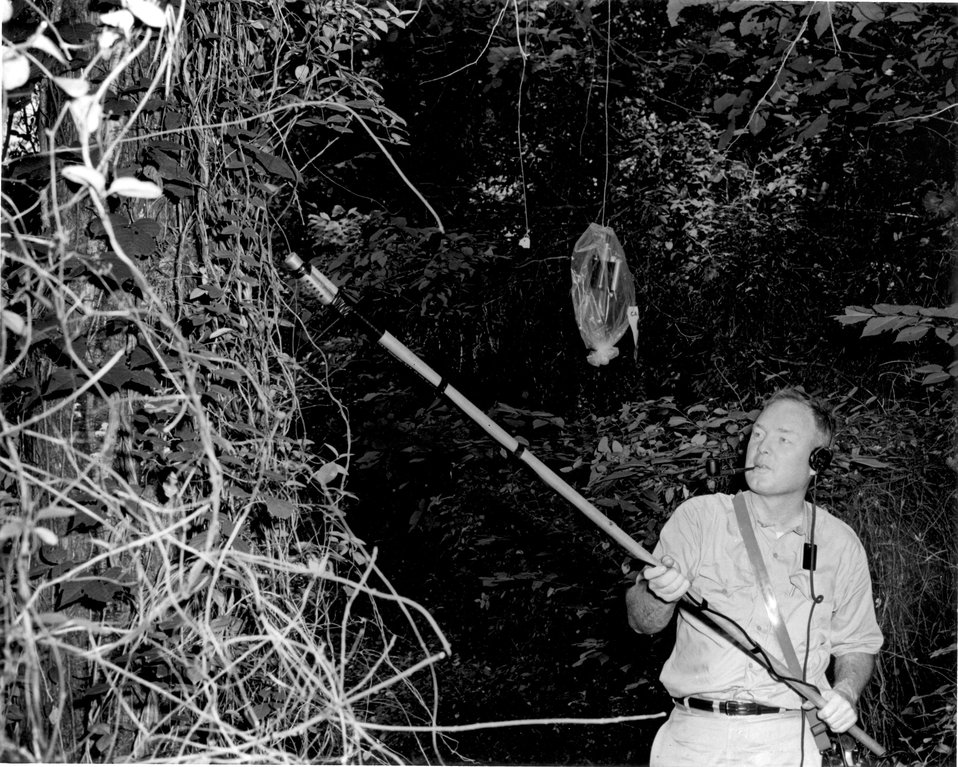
Insects and small animals 'tagged' with harmless amounts of radioactive material are traced and studied by participants in the radiation ecology courses presented by the Special Training Division of Oak Ridge Associated Universities, in cooperation with Oak Ridge National Laboratory. c. 1970